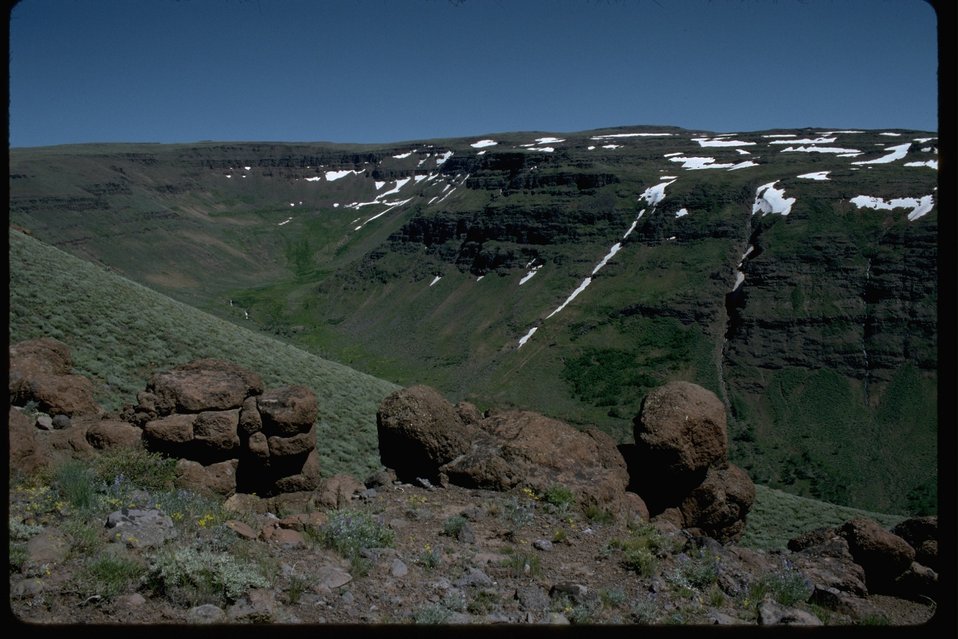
The far reaches of the Little Blitzen Gorge, from the north side looking to the southeast.